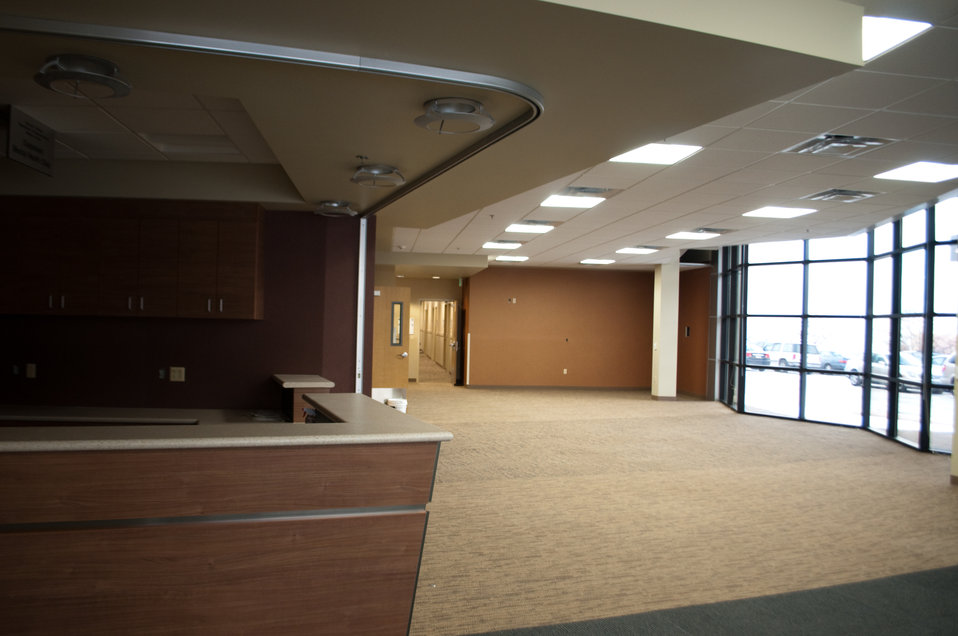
Salt Lake City Veterans Affairs Outpatient Mental Health Clinic

SALT LAKE CITY (Jan. 7, 2011) – Furniture is the thing missing from the waiting lobby of the recently constructed Salt Lake City Veterans Affairs Outpatient Mental Health Clinic here Jan. 5. Construction of the $6.3 million facility was overseen by the U.S. Army Corps of Engineers Sacramento District. The 1,600 square-foot waiting lobby features individual booths for increased privacy during check-in, and is 1,300 square feet larger than the current waiting room, an 81 percent increase.